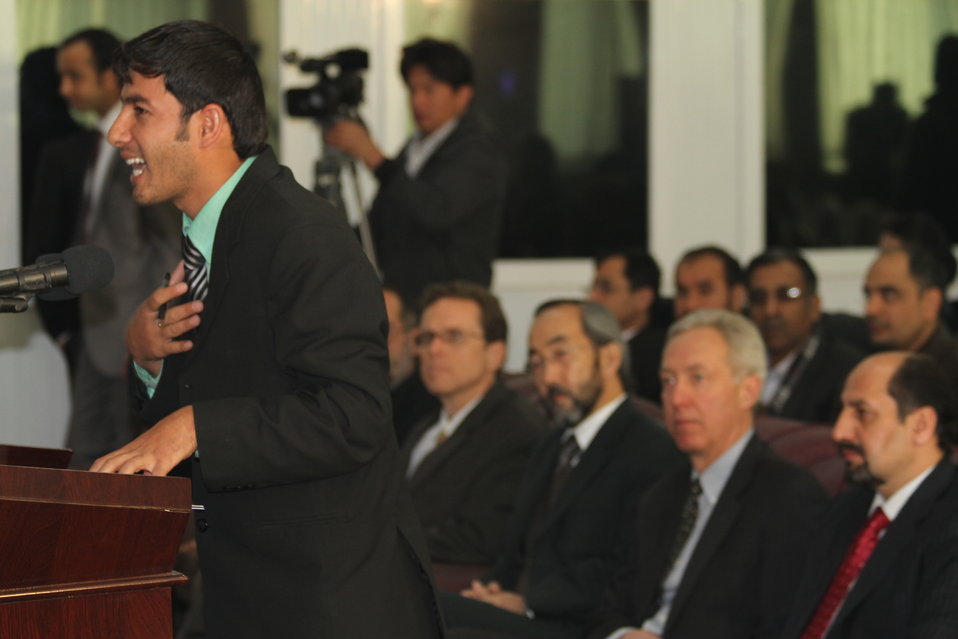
Presenting Case

Dr. Abdul Malik Kamawi, Director of Administration for Afghanistan Supreme Court, , U.S. Ambassador Hans Klemm, Coordinating Director of Rule of Law and Law Enforcement and Ken Yamashita, Mission Director, USAID, look on as student from Al Biruni presents case to judges at the 2012 Jessup Moot Court Competition at the Supreme Court in Kabul, Afghanistan on Wednesday, January 11, 2012.